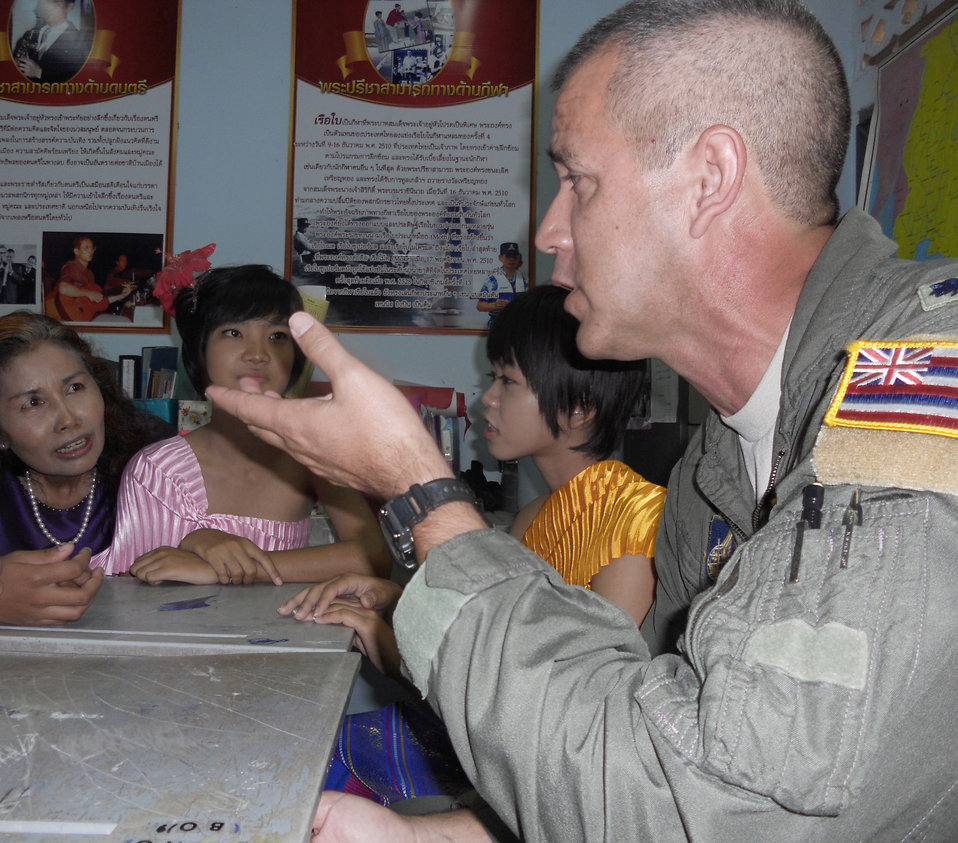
Cope Tiger 2011

Lt. Col. Mike Akiowa explains Hawaiian history March 14, 2011, to students and teachers at the Ang Huay Yang School in Korat, Thailand. Airmen visited the school with members of the Royal Thai and Republic of Singapore air forces during Cope Tiger 2011, an annual, multilateral, joint field training exercise being conducted in Thailand March 14 through 25. Colonel Akiowa is a pilot assigned to the 203rd Air Refueling Squadron at Joint Base Pearl Harbor-Hickam, Hawaii.